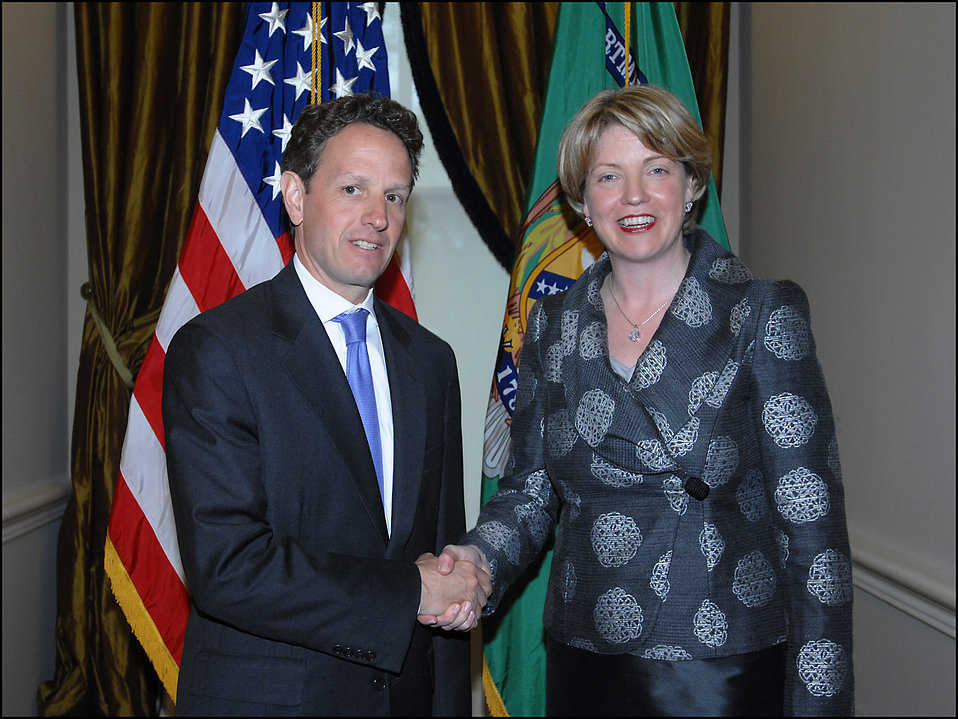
Deputy Prime Minister of Ireland Mary Coughlan

On April 20, 2009, Secretary Geithner met with Deputy Prime Minister of Ireland Mary Coughlan at Treasury.